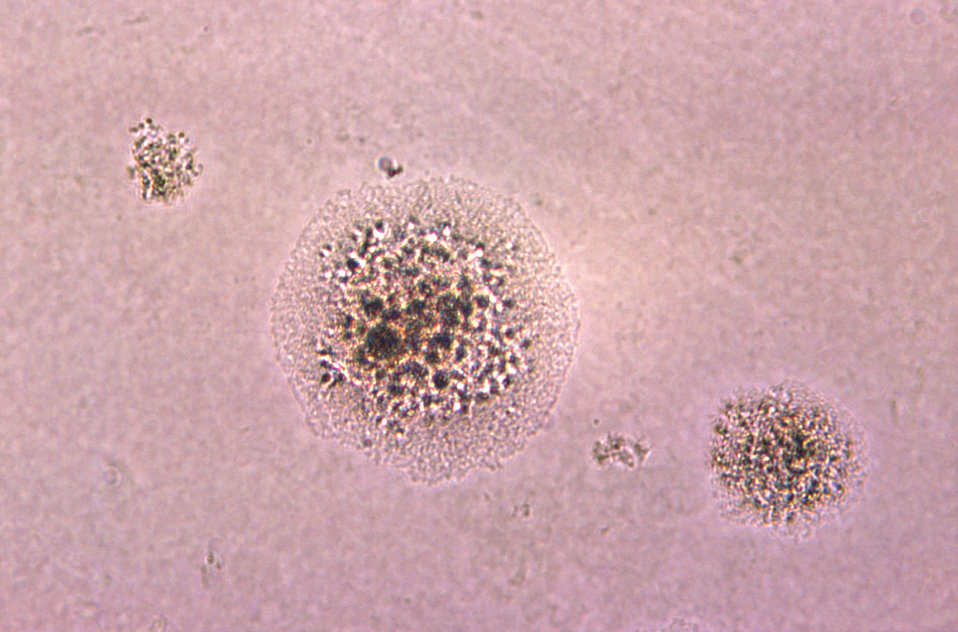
Magnified 380X, this image depicts the morphologic characteristics displayed by several Gram-positive, Actinomyces bovis bacterial microcolonies, of the strain, A-1109, which was cultivated on an unknown culture medium.